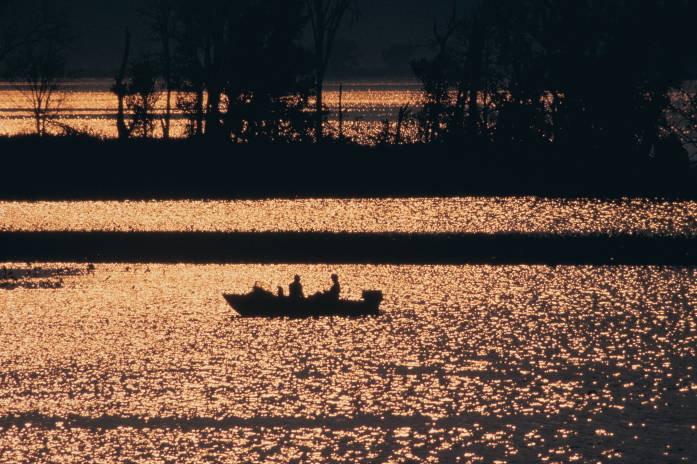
Mississippi River boating